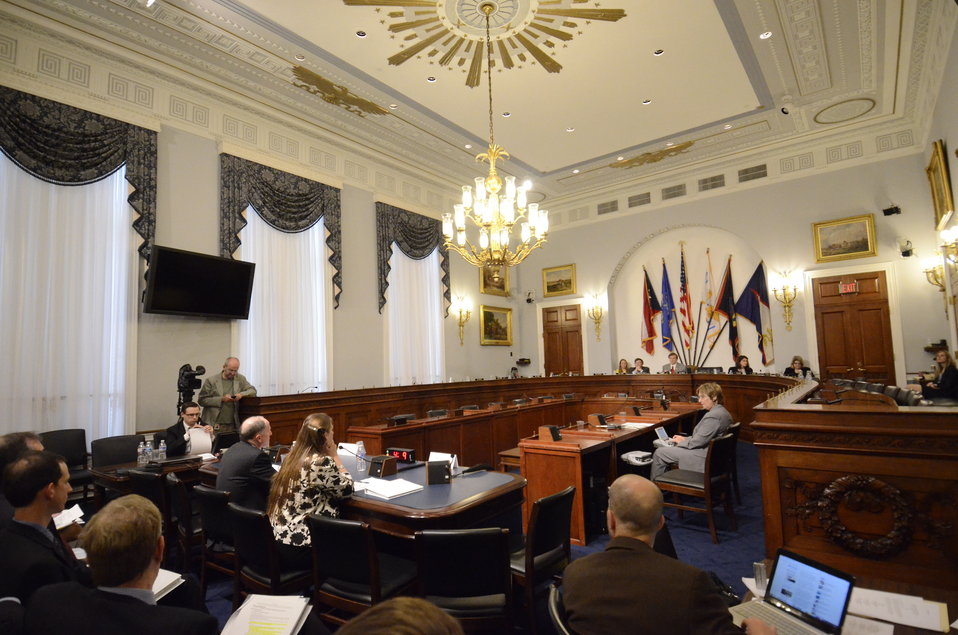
Interior Department Deputy Assistant Secretary for Fish and Wildlife and Parks Eileen Sobeck and Agriculture Department Animal Plant and Health Inspection Service (APHIS) Associate Administrator Dr. Kevin Shea speaking on Retailers & Entertainers Lacey Implementation & Enforcement Fairness Act & Freedom from Over-Criminalization & Unjust Seizures Act at the Longworth House Office Building in Washington, D.C. on Tuesday, May 8, 2012.